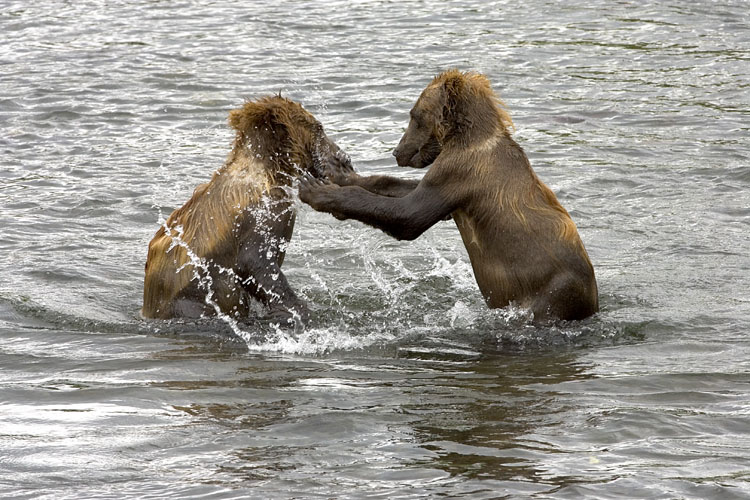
KOD Hildebrand (28)

Kodiak National Wildlife Refuge- Wildlife